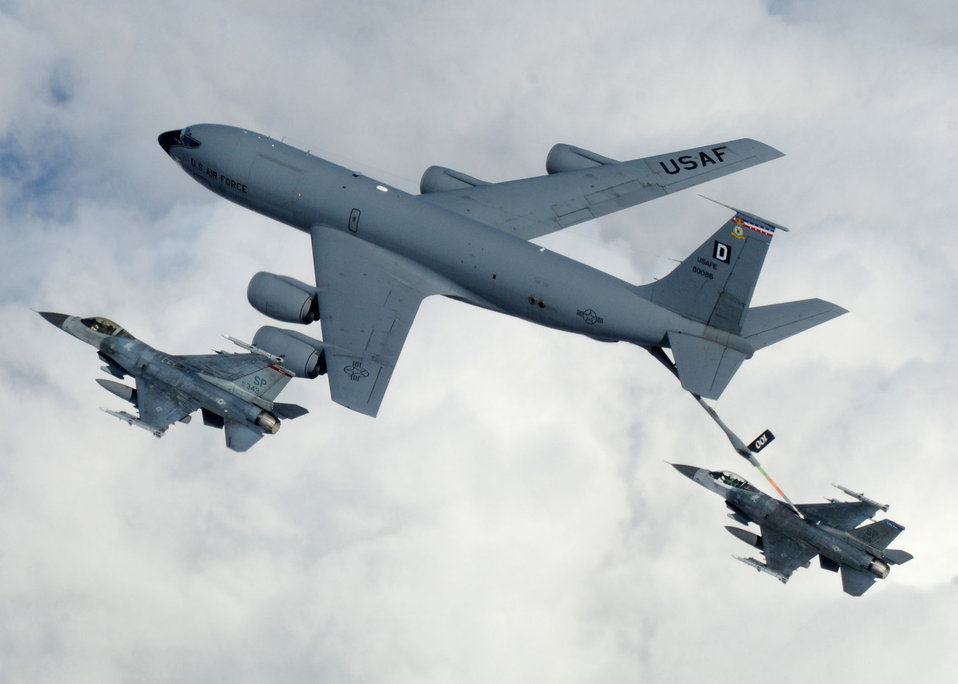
Need more fuel

A KC-135 Stratotanker from Royal Air Force Mildenhall, England, refuels a pair of F-16 Fighting Falcons April 7 during a multinational exercise over the Baltic States. The Stratotankers from RAF Mildenhall feature the